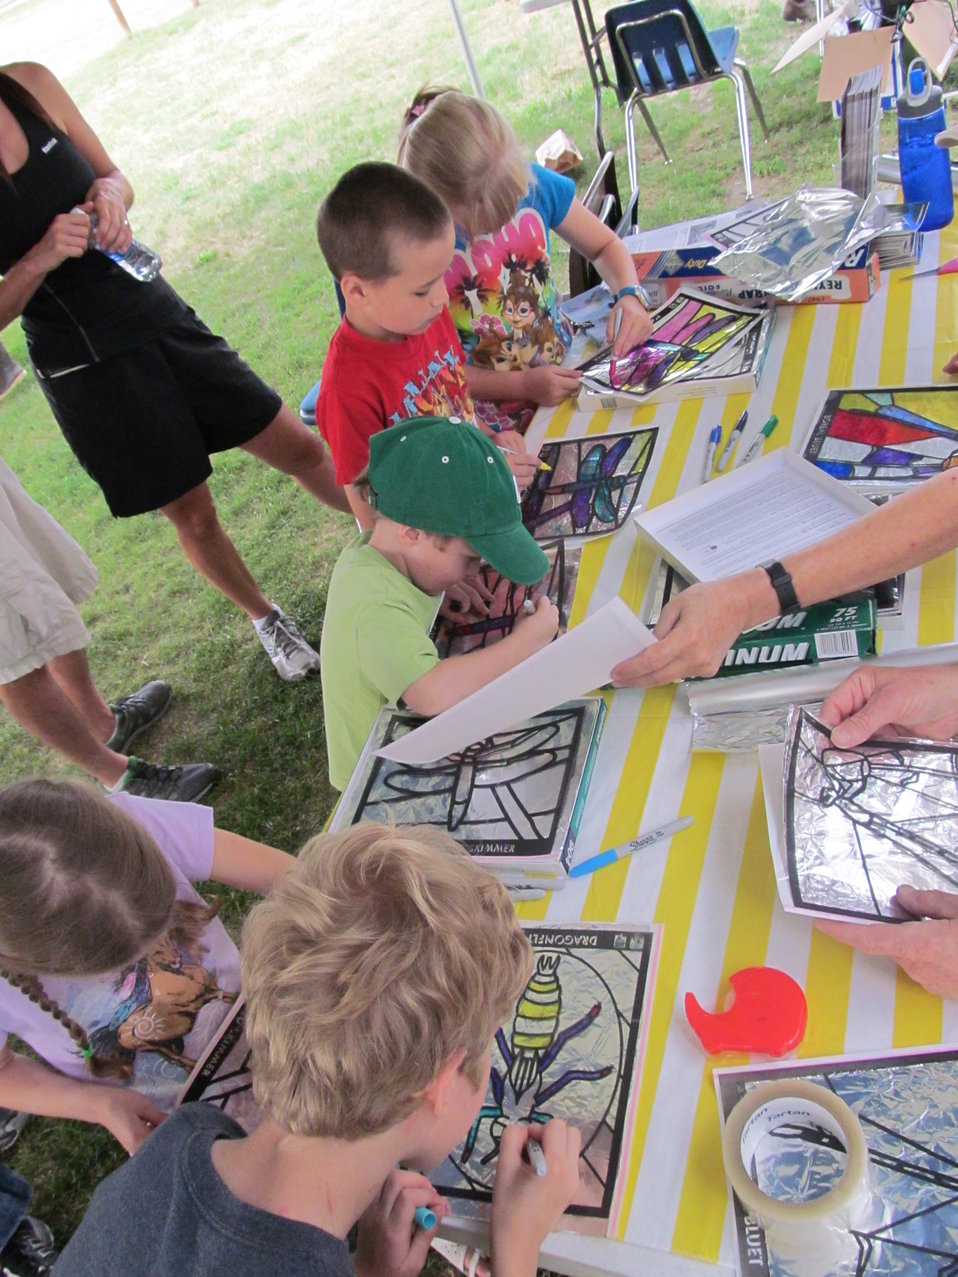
Stained glass window craft

(USFWS)